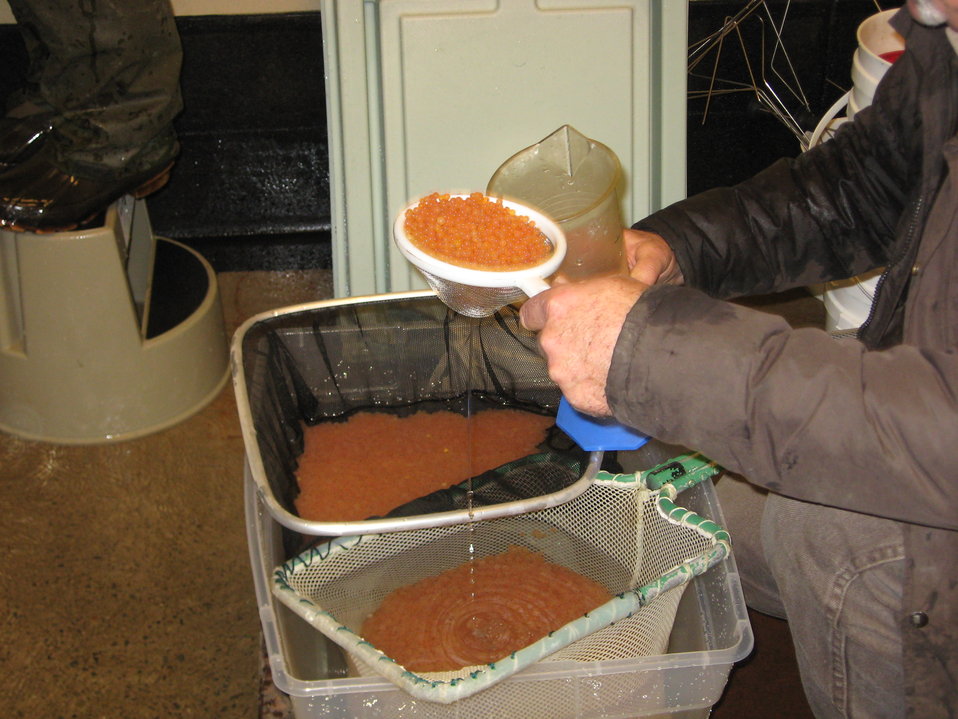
Fishery biologist with lake trout eggs